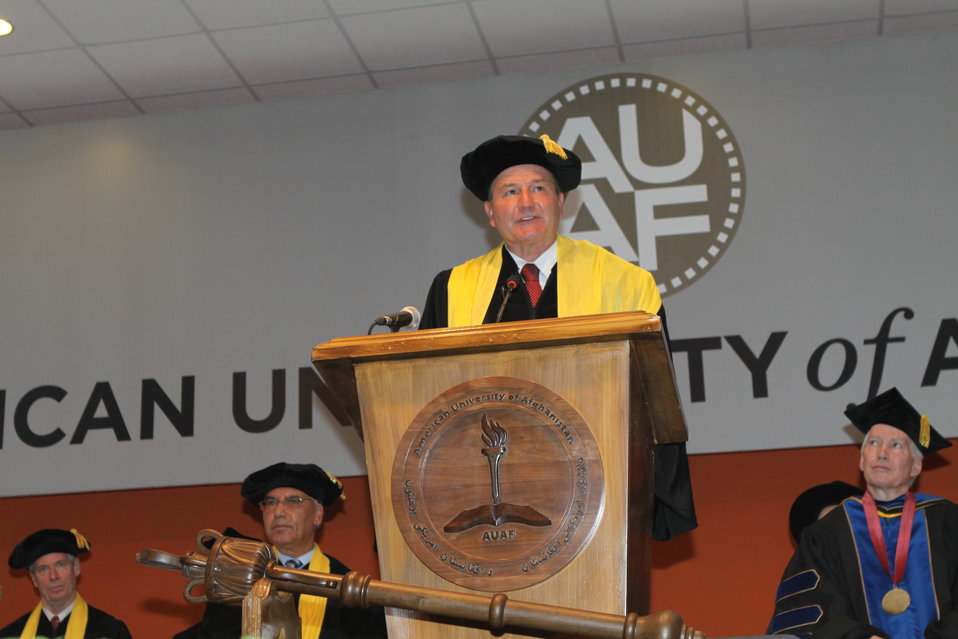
100526 AUAF Graduation 212